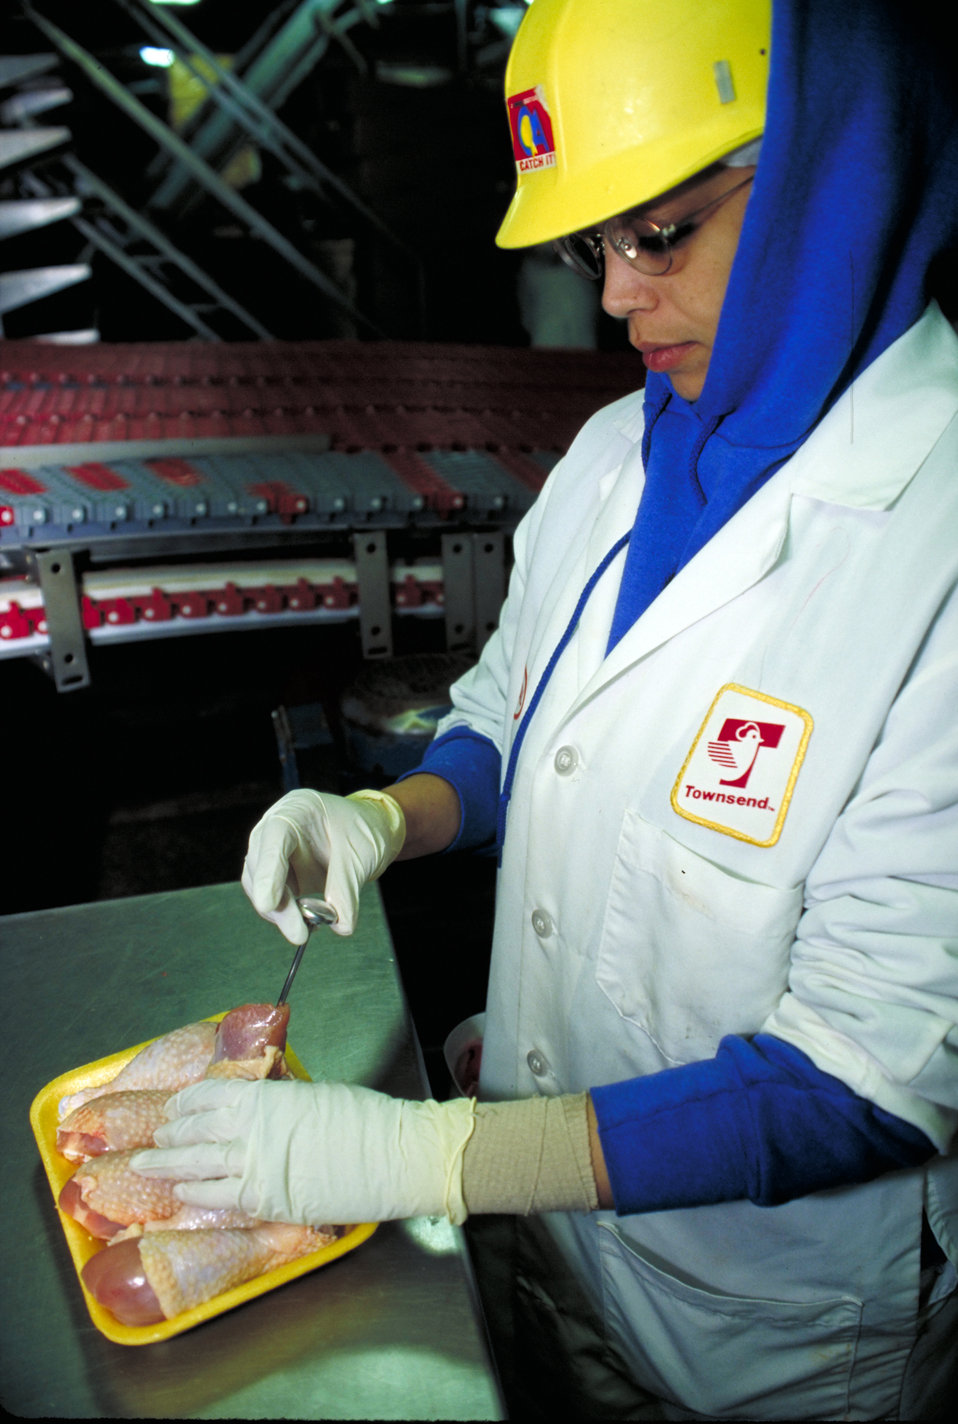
U.S. Department of Agriculture (USDA) Food Safety Inspection Service (FSIS) inspector checks the temperature of chicken carcasses at various control points to compare them with those measured and recorded by the plant to prevent multiplication of pathogenic bacteria in compliance with Hazard Analysis and Critical Control Points (HACCP) issued by FSIS on June 15, 1995. USDA photo Lester Shepherd.